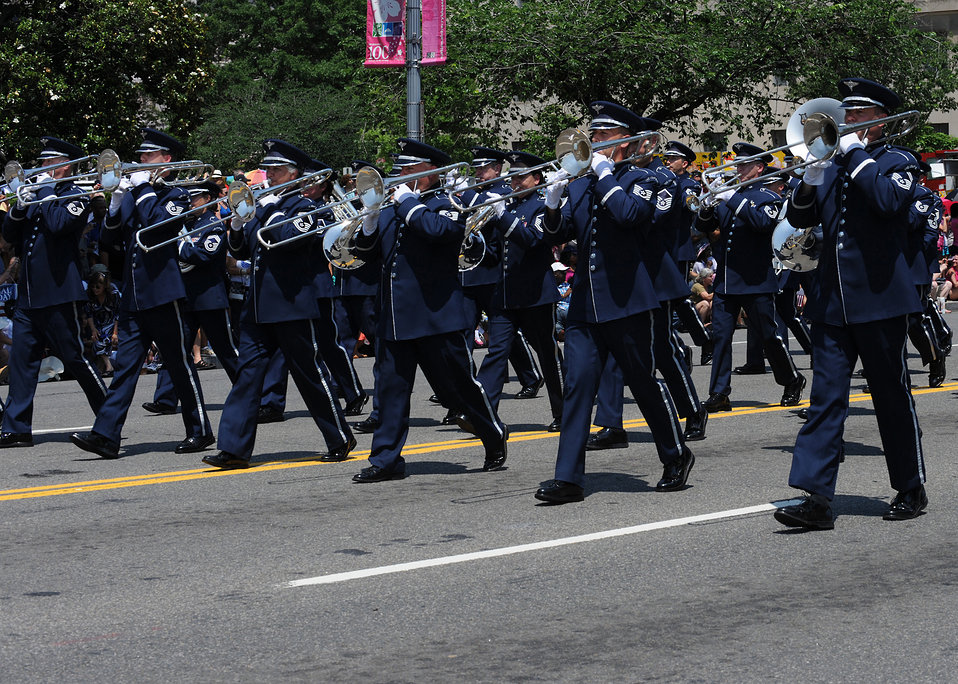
National Memorial Day Parade

The United States Air Force Band performs during the National Memorial Day Parade, May 28, 2012 in Washington D.C. The annual National Memorial Day Parade is an opportunity for thousands of patriotic Americans to come together and honor those who have sacrificed so much in service to our country.